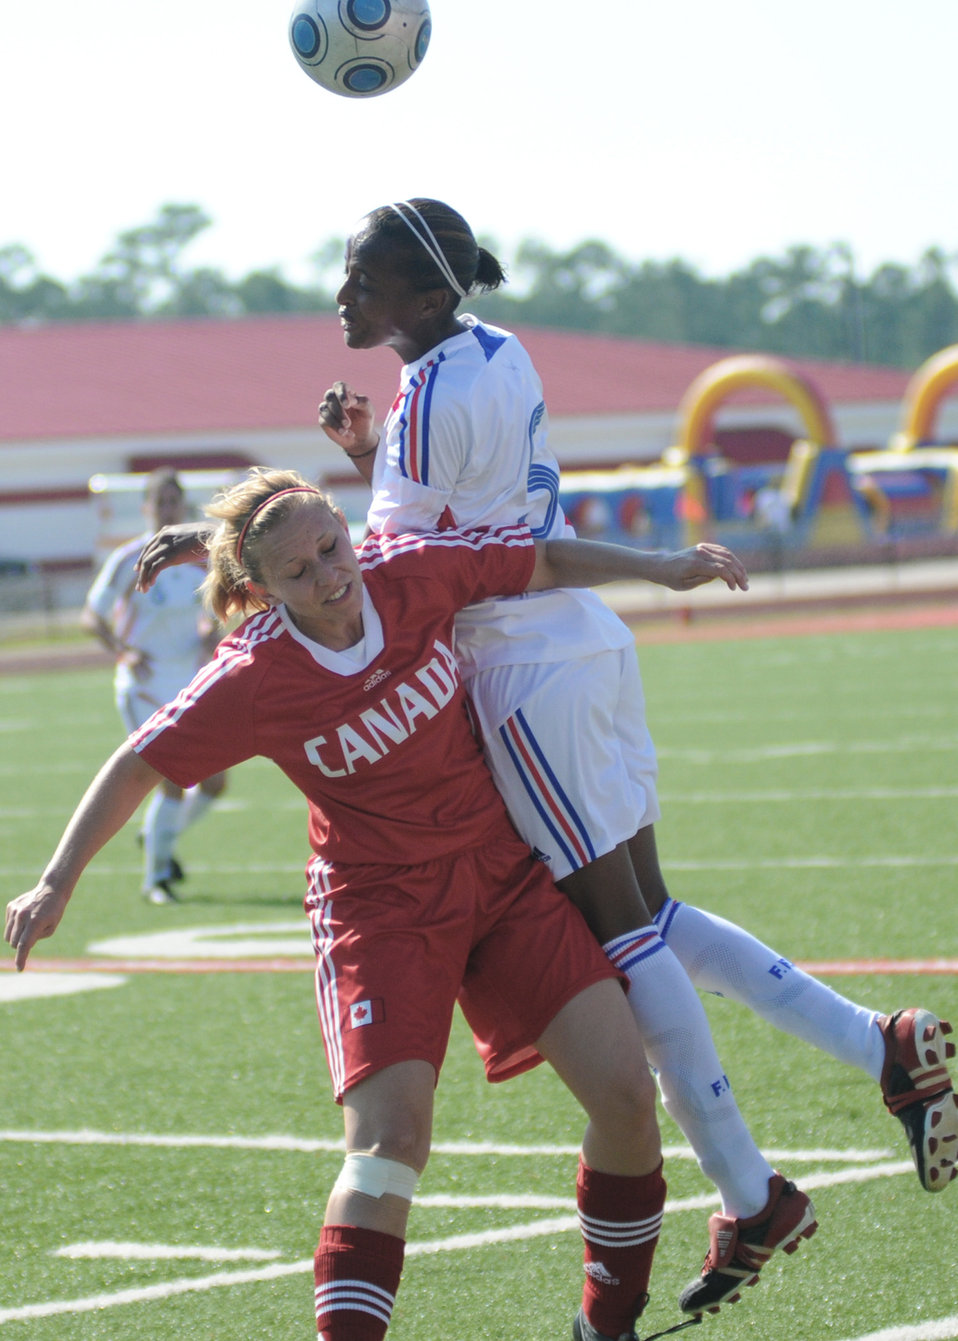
Keesler officials host Women's Soccer Championship

Soccer players from Canada and France compete during the 5th Counseil Du International Sports Militaire Women's Soccer Championship at Biloxi High School Stadium June 7 in Mississippi. The CISM tournament, hosted by officials from Keesler Air Force Base, Miss., includes teams from Brazil, Canada, France, Germany, The Netherlands, South Korea and the United States.